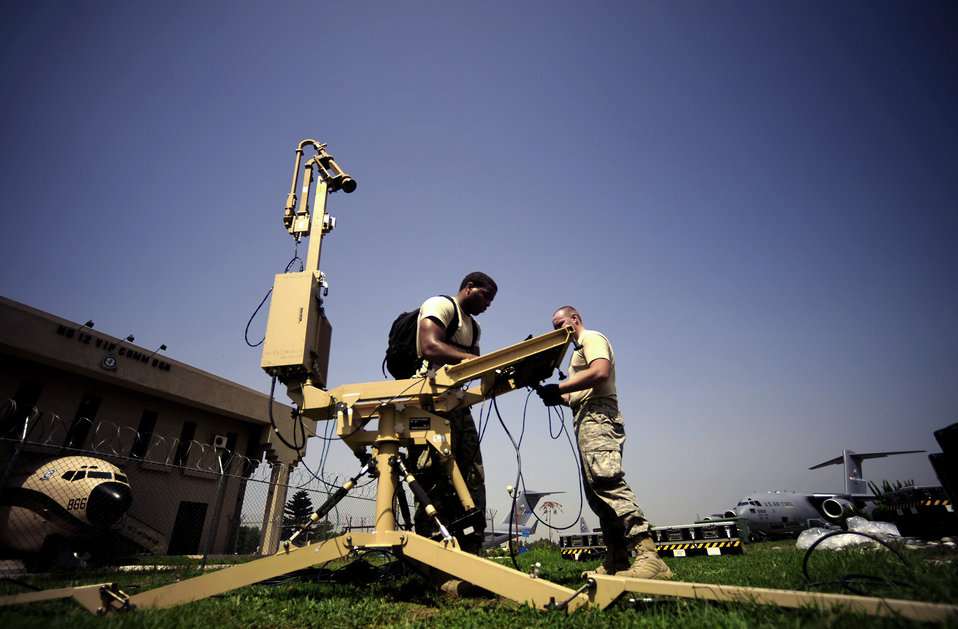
FLOOD RELIEF PAKISTAN

Airmen from the Contingency Response Element of the 818th Contingency Response Group, 621st Contingency Response Wing from Joint Base McGuire-Dix-Lakehurst, N.J., set up antennas for Internet and telephone capabilities during initial build-up Aug. 28, 2010, at Chaklala Air Force Base, Pakistan. The CRE arrived Aug. 28, 2010, to take over responsibilities for loading and off-loading U.S. aircraft with supplies for Pakistan flood relief efforts.